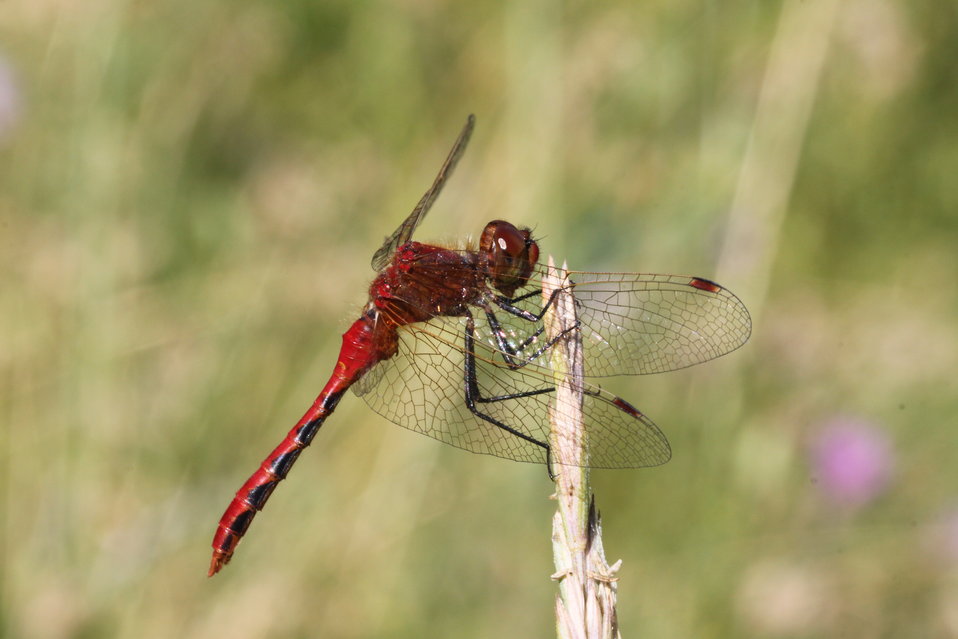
Cherry-faced Meadowhawk

Sympetrum internum a common dragonfly on the Refuge beginning in July frequenting open grassy areas.